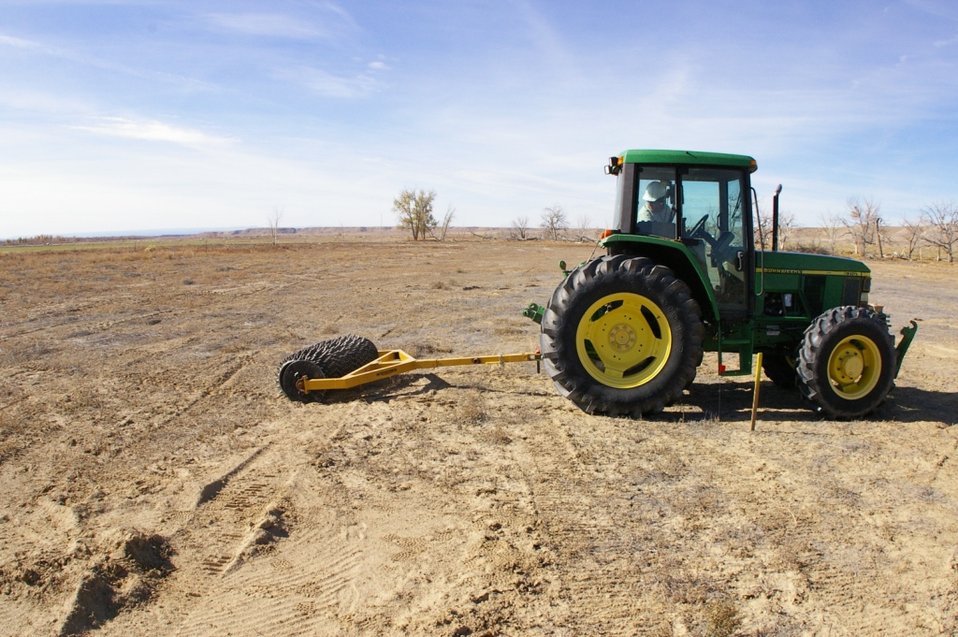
Cultipacking

A cultipacker was used to make small depressions in the earth to capture moisture and to press the grass seed into the dirt. This is part of a grassland research project at Ouray National Wildlife Refuge.